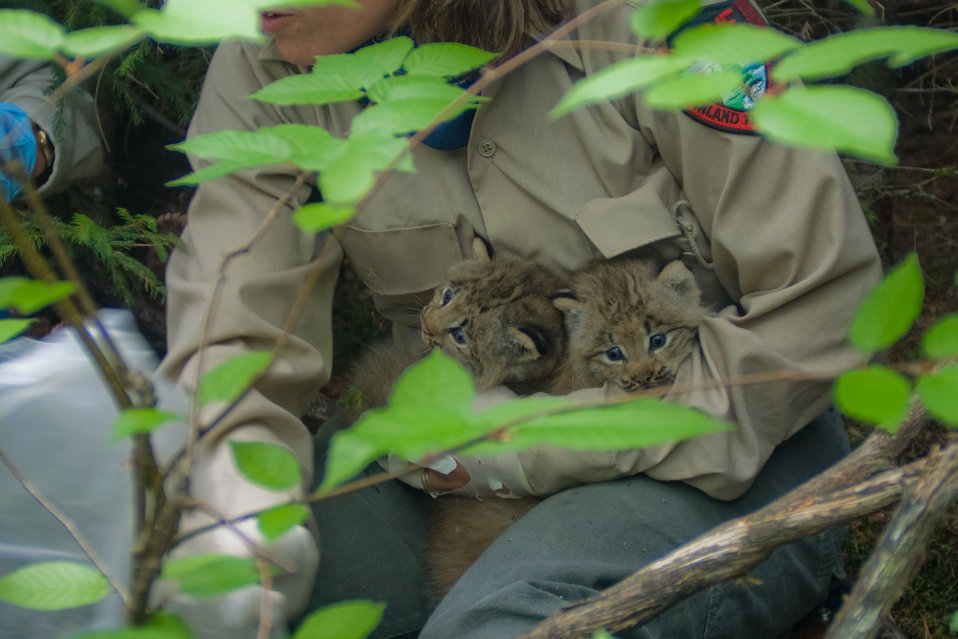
Canada Lynx kittens

Lynx kittens are held by a biologists shortly after being removed from their den. The team would station themselves apart from the den in order to maintain the integrity of the lynx's habitat.